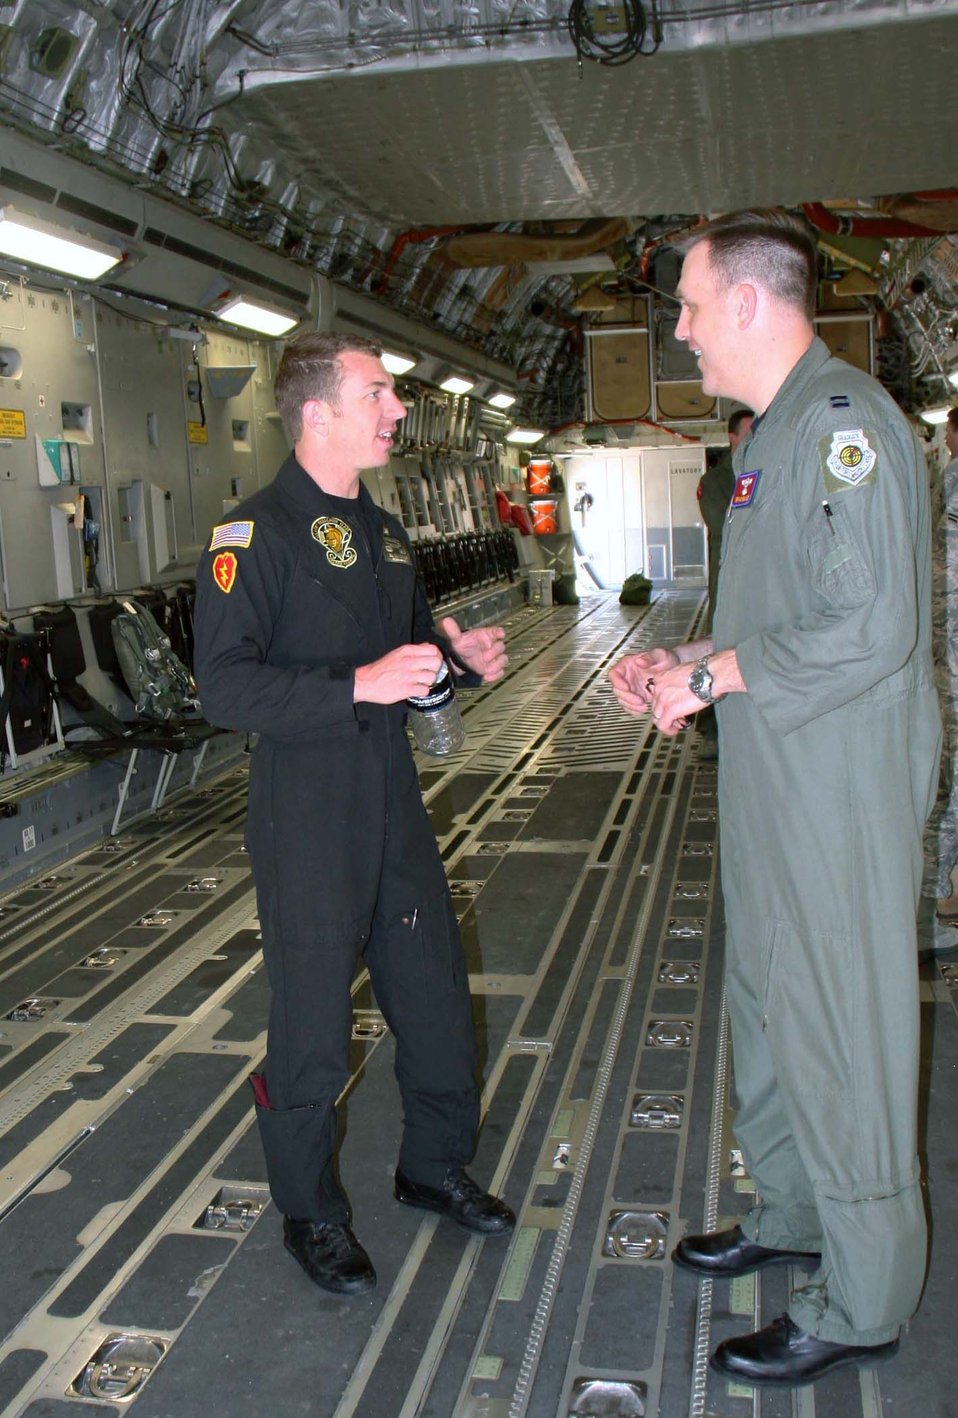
Golden Knights await record

Army Staff Sgt. Ben Borger (left) of the Army parachute team the Golden Knights, and Capt. Bryan Bailey perform a walkthrough of a C-17 Globemaster III April 13, 2010, at Altus Air Force Base, Okla. Sergeant Borger jumped out of the plane at an altitude of 32,000 feet and is currently awaiting confirmation of the new set record from the Guinness Book of World Records. Captain Bailey is the C-17 aircraft commander.